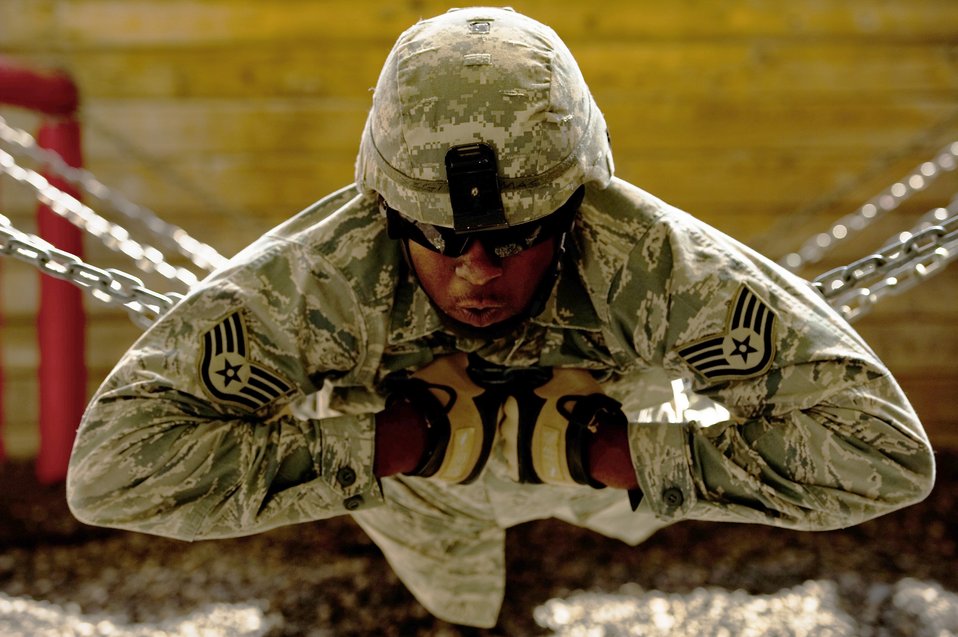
Combat Leadership Course

Staff Sgt. Marcus Thomas holds onto a chain which creates a human bridge helping him and his team complete an obstacle Oct. 22, 2010, at Camp Bullis, Texas during the Combat Leadership Course.